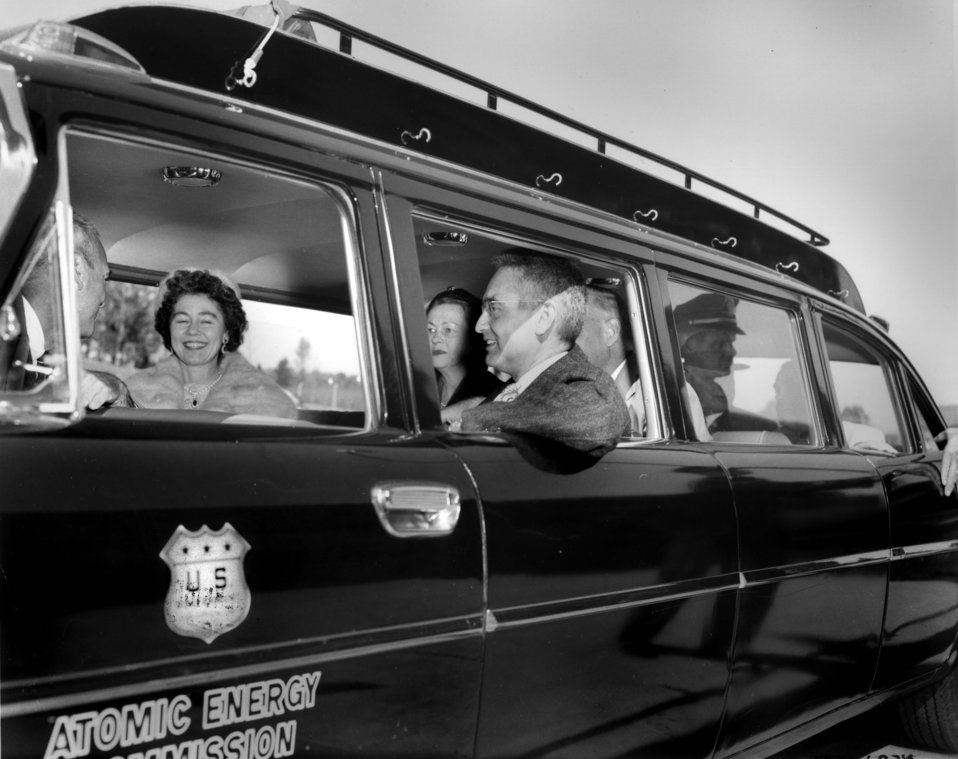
Queen Frederika Visit to ORNL Oak Ridge

58-1003b DOE photo Ed Westcott 11-7-1958 Oak Ridge Tennessee